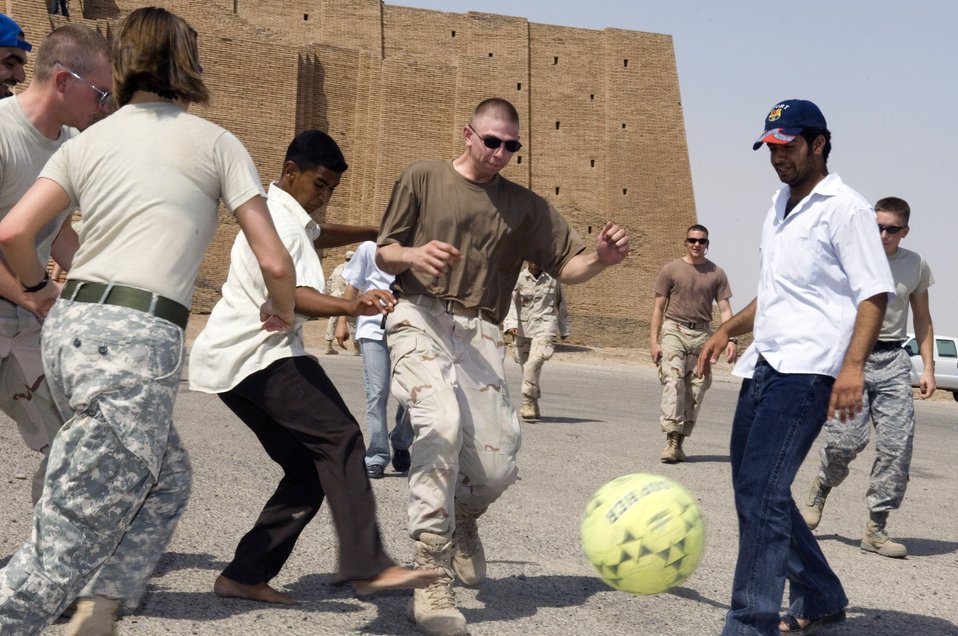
Americans, Iraqis interact at historical monument

Airmen, Soldiers and local Iraqi citizens play soccer during an Aug. 21 visit by 80 Iraqi citizens to the historical Ziggurat located on Ali Air Base, Iraq. The Ali AB First Four Council sponsored the visit. This is the first time in more than 10 years that Iraqi civilians have been allowed to step on the grounds of the historical site, which was built in the ancient city of Ur and includes the house of the biblical prophet Abraham